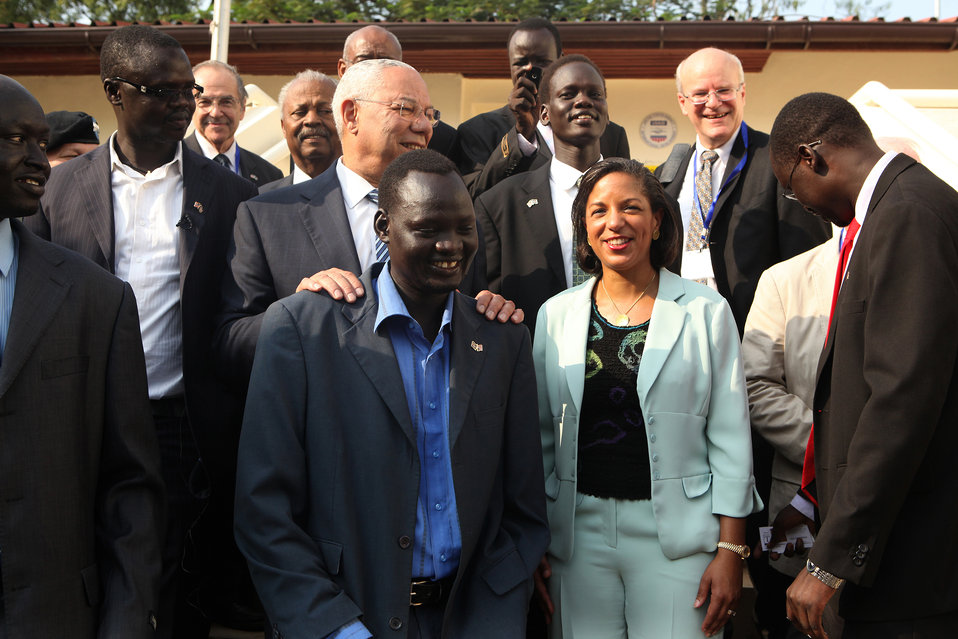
South Sudan Independence Day

South Sudanese-American 'Lost Boys' with U.S. Special Envoy for Sudan Ambassador Princeton Lyman; Honorable Donald M. Payne, U.S. Representative from New Jersey and Ranking Member of House Foreign Affairs Subcommittee on Africa and Global Health; Ret. General Colin Powell, former Secretary of State for the United States; Ambassador Susan E. Rice, U.S. Permanent Representative to the United Nations; and Ambassador Donald K. Steinberg, Deputy Administrator for USAID; following the inauguration of the new U.S. Embassy in Juba, South Sudan on July 9, 2011.